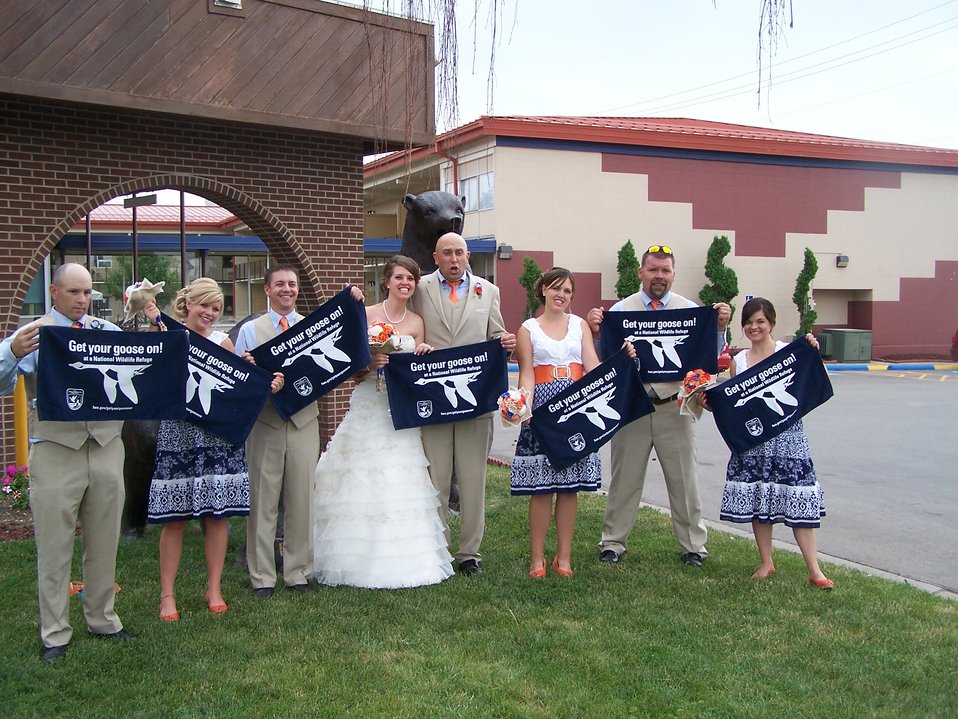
Get Your Goose On! - Holy Matrimony Style

Bowdoin National Wildlife Refuge's Fire Management Specialist, Jim Forsythe, and his Wedding Party Gets their Goose On!